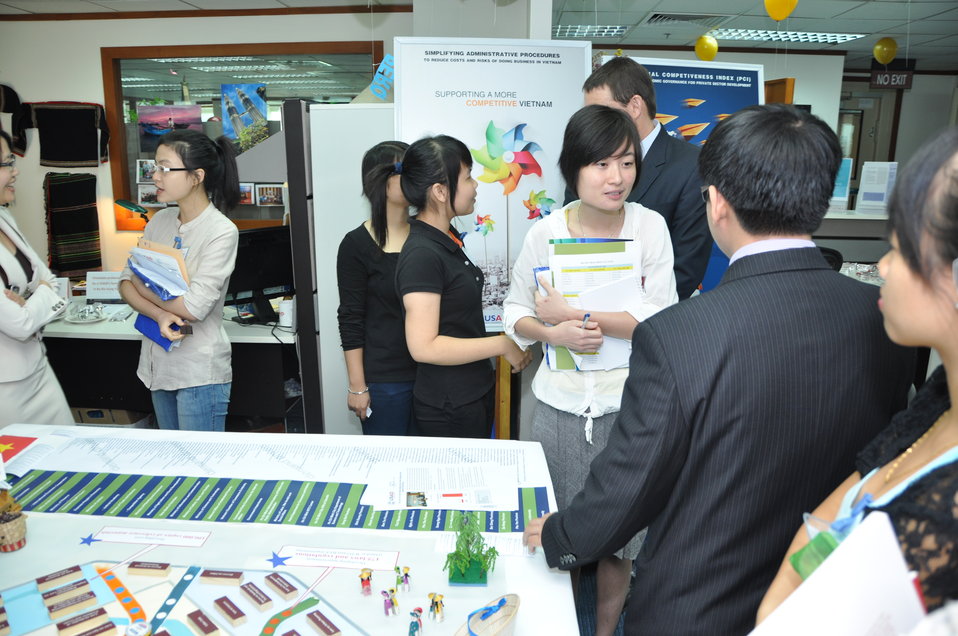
USAID Vietnam Open House, November 3, 2011